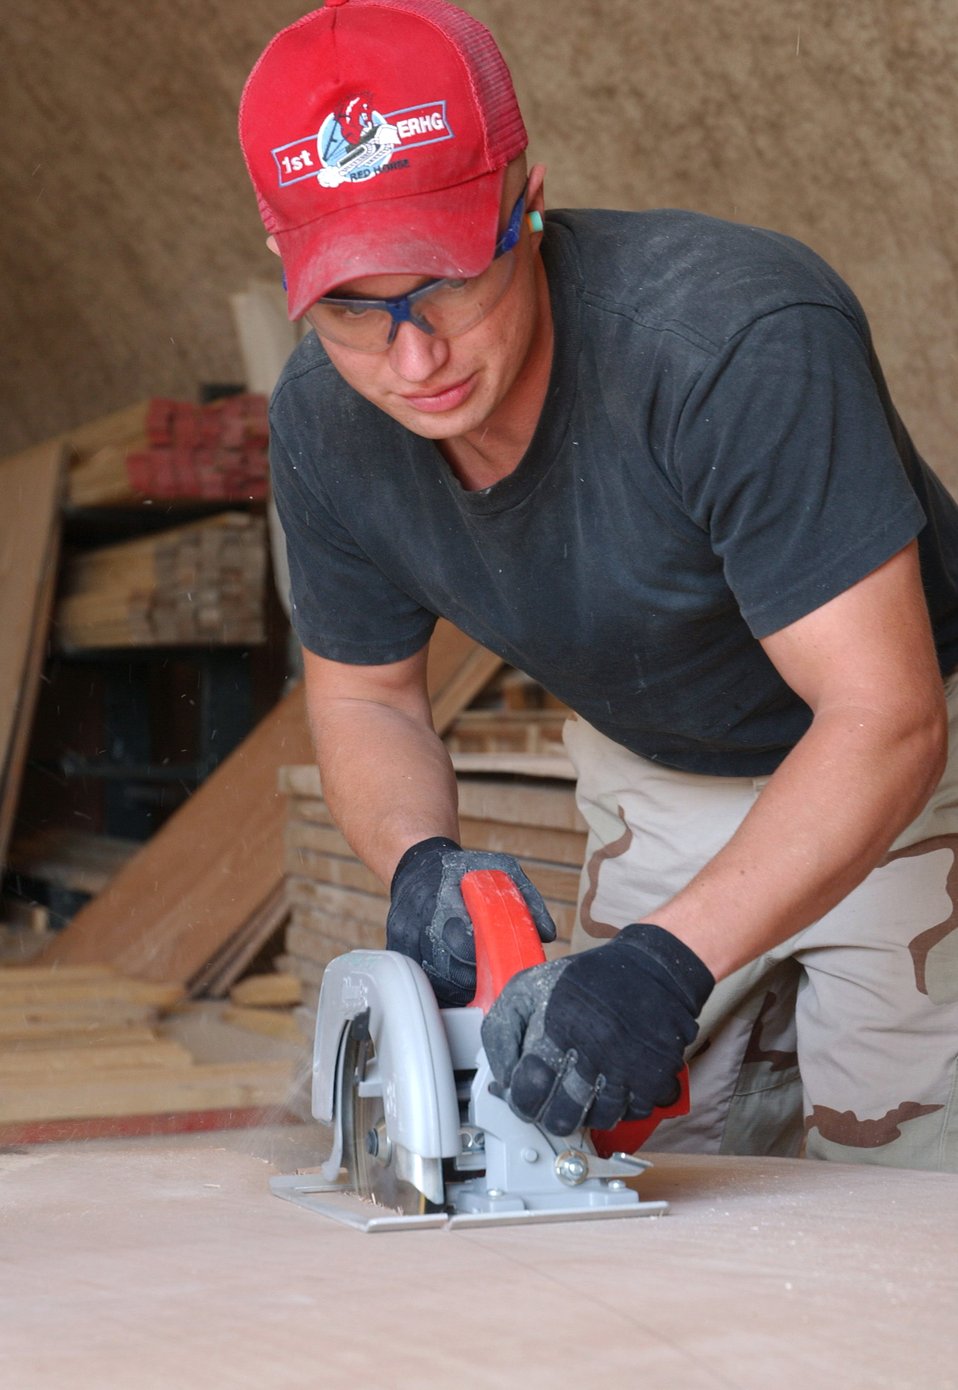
Building crates

Staff Sgt. Benjamin Jensen builds baggage crates at the passenger terminal at a deployed location in southwest Asia, March 8, 2006. The crates are used to transport the baggage of forward deploying servicemembers. Sergeant Jensen is assigned to the 379th Expeditionary Civil Engineer Squadron. He is deployed from Mountain Home Air Force Base, Idaho.